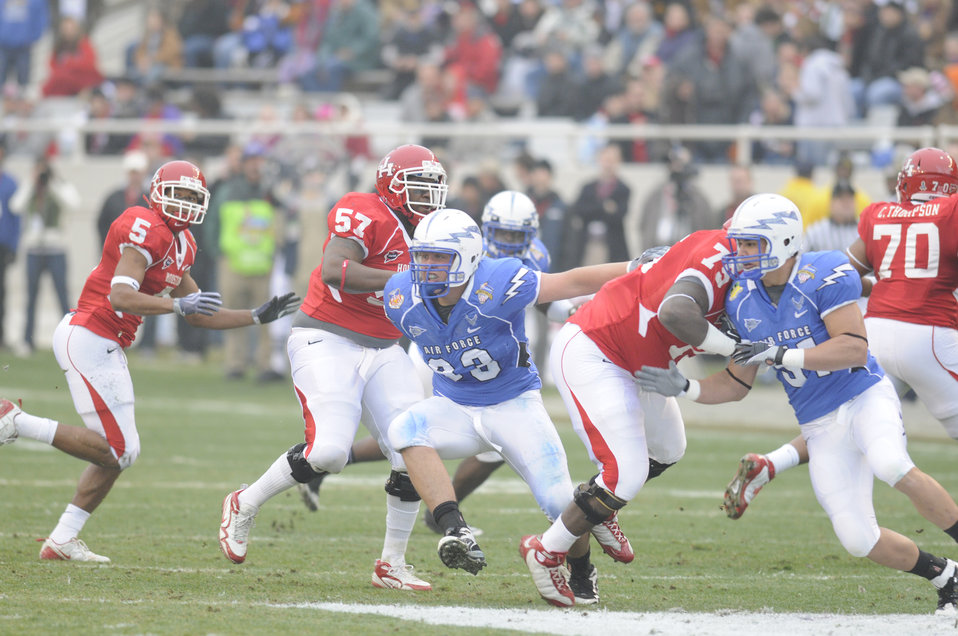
Armed Forces Bowl

Falcons defensive lineman Ben Garland and defensive end Myles Morales slip past members of the University of Houston Cougars during the Armed Forces Bowl Dec. 31, 2009, at Fort Worth, Texas. Air Force Academy took the win 47-20.